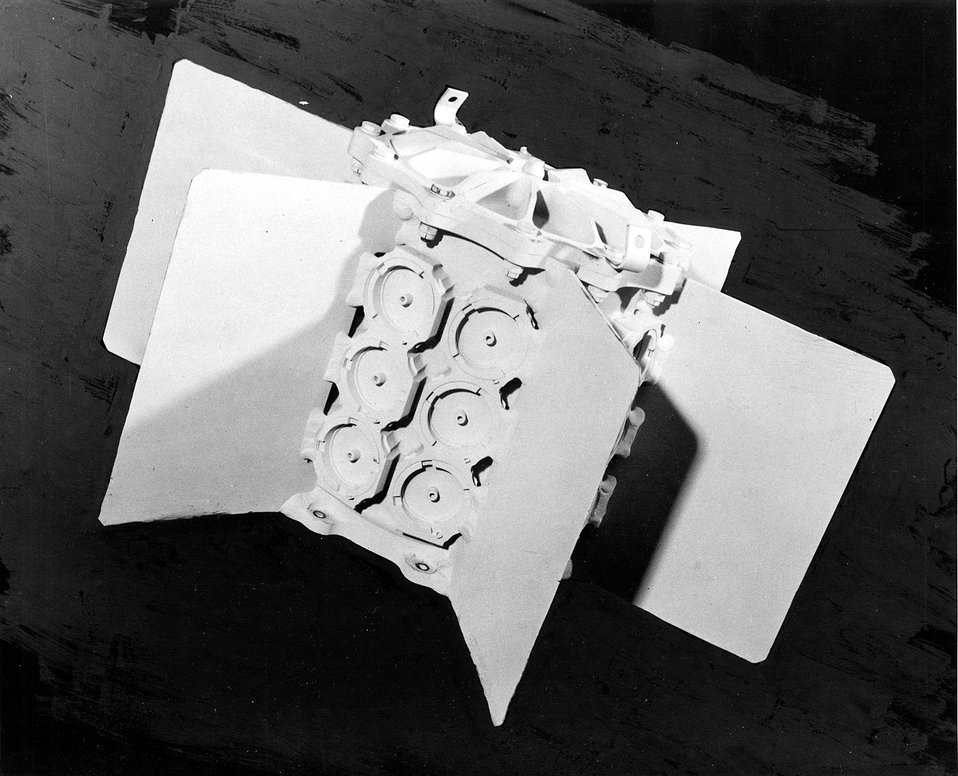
The isotopic generator is the sole power source for a Department of Defense Satellite launch recently.